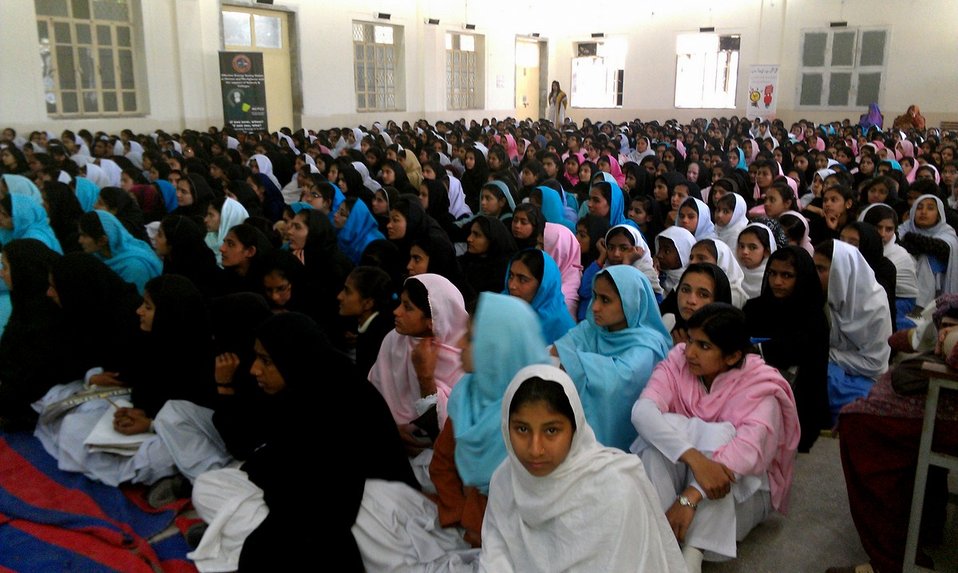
USAID Power Distribution Program-Energy Conservation Seminar at Govt. Comprehensive Girls Higher Secondary School, Multan.

Multan, January 28, 2013 - the USAID Power Distribution Program with the collaboration of MEPCO, held an Energy Conservation Seminar at Govt. Comprehensive Girls Higher Secondary School, Multan.
The purpose of the seminar was to:
• Inform students about the USAID Power Distribution Program and the role of Distribution companies in Pakistan.
• Educate students and teachers about the effective energy saving methods they can apply at homes, schools and workplaces.
More than 2000 students along with principal & teachers attended the seminar & participated actively in the quiz session